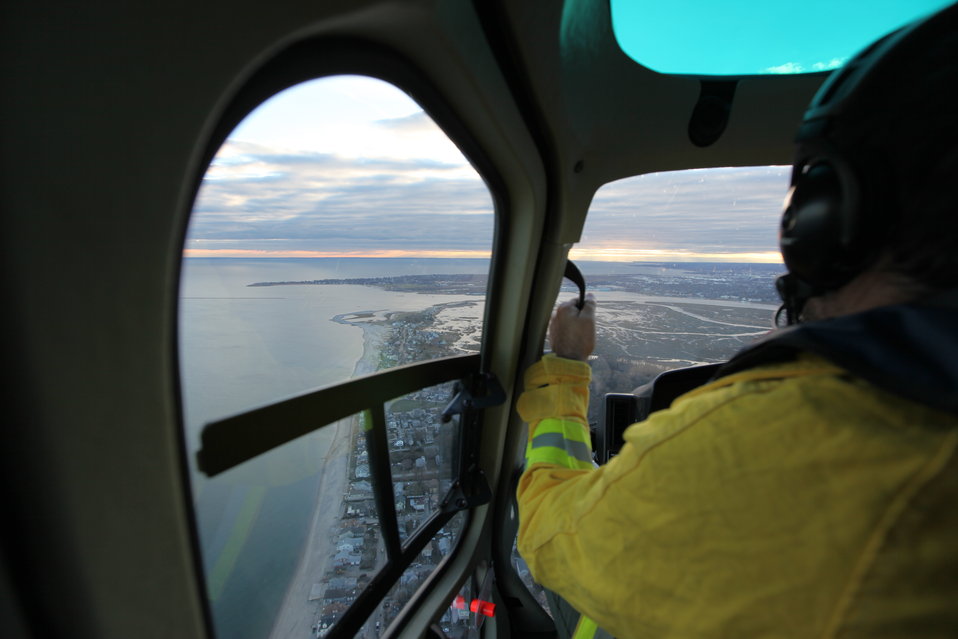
Helicopter flight above Stewart B. McKinney National Wildlife Refuge (CT)

Stewart B. Mckinney NWR Refuge Manager Rick Potvin surveys damage to the refuge aboard the USFWS heliciopter.